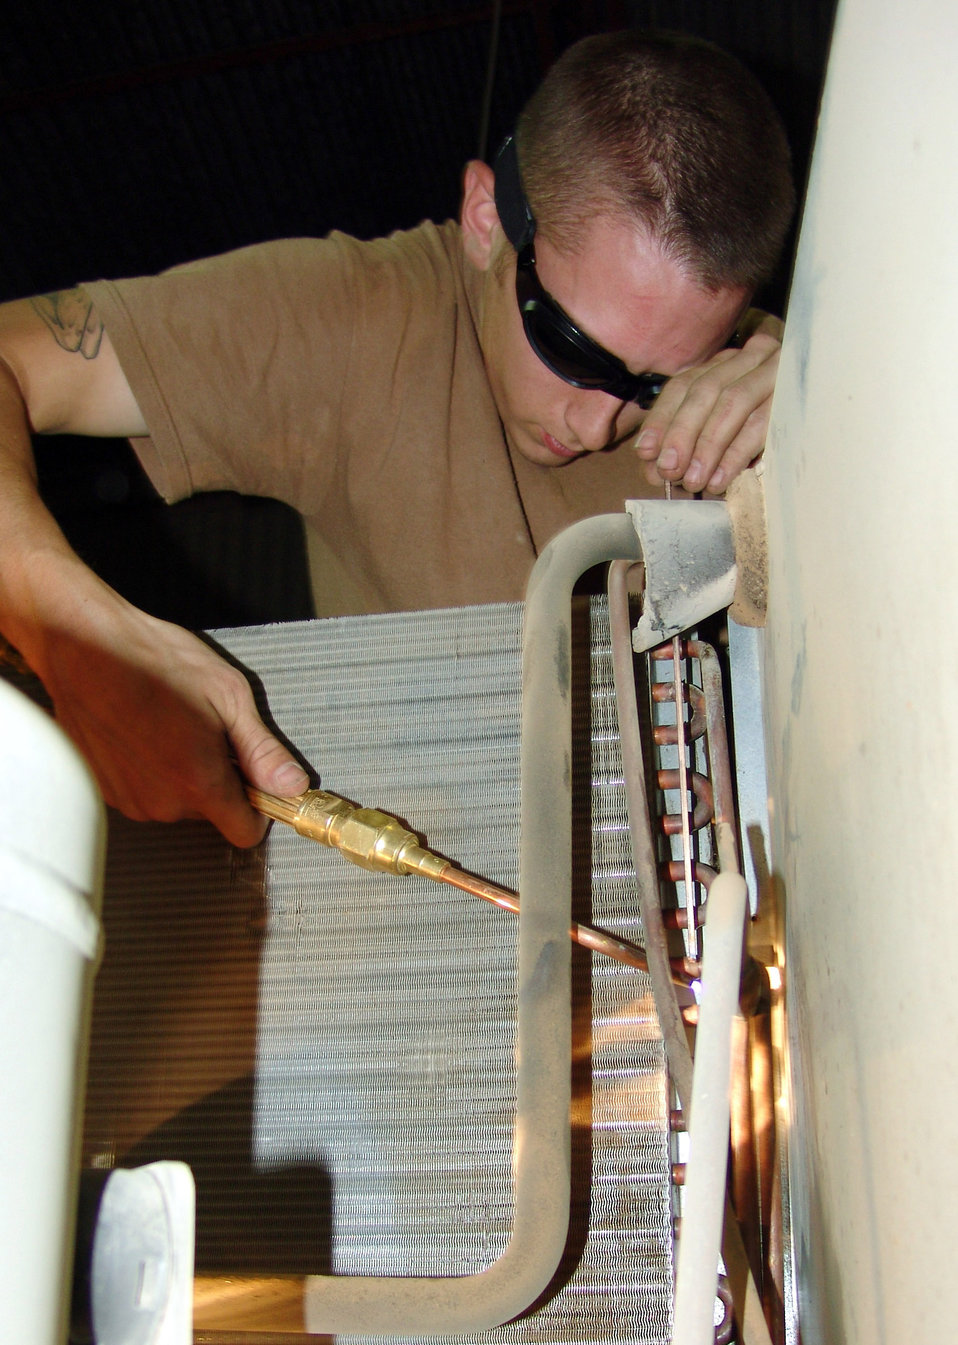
Keeping cool requires hard workKeeping cool requires hard workKeeping cool requires hard workKeeping cool requires hard work

KIRKUK AIR BASE, Iraq - Airman 1st Class Jason Klingman repairs a leak in an air conditioning unit. The heating ventilation and air conditioning Airmen here keep a cool breeze blowing on Airmen and equipment during Iraqi summers with temperatures topping 120 degrees.